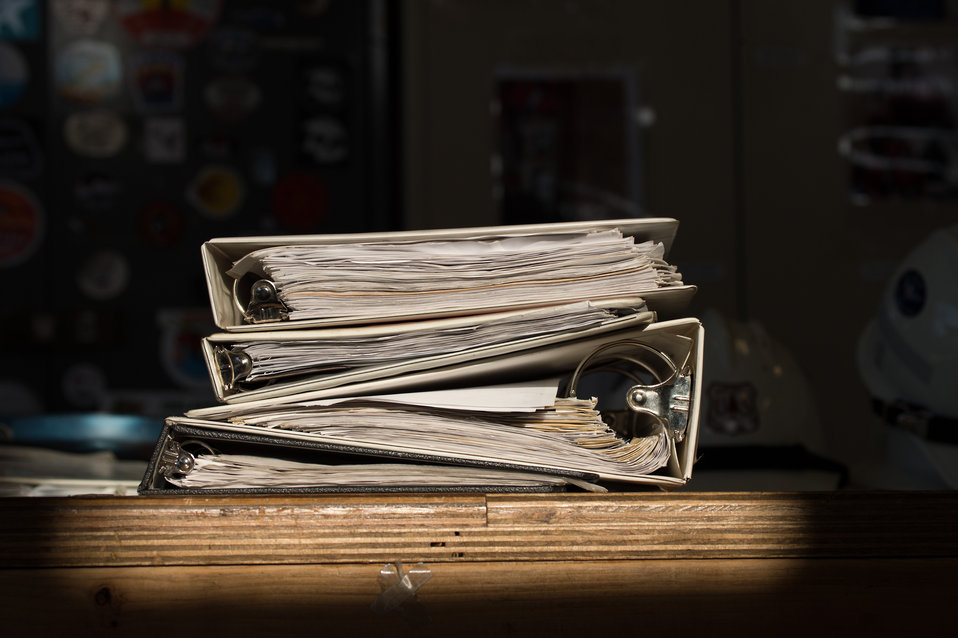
Equipment log books that contain all inventory, inspection, usage, condition and other life span and maintenance records of all ropes and descending devices used by veteran wildland firefighter rappellers at the U.S. Department of Agriculture (USDA), U.S. Forest Service (USFS) National Helicopter Rappel Program’s Rappel Academy at Salmon Air Base in Salmon, ID on Wednesday, May 14, 2014. From May 12, 2014, 72 veteran rappellers from all over the nation, 30 support staff, and three helicopters with flight crews attend the training at Salmon Air Base. Participants will rappel into the Perreau Creek area. The annual training is delivered in accordance with the National Rappel Operations Guide; strengthen leadership, teamwork, and communications within the rappel community, and produces quality aerial delivered firefighters for use in fire and aviation operations. The USDA Forest Service National Helicopter Rappel Program’s primary mission is initial attack. Rappel crews may be utilized for large fire support, all hazard incident operations, and resource management objectives.